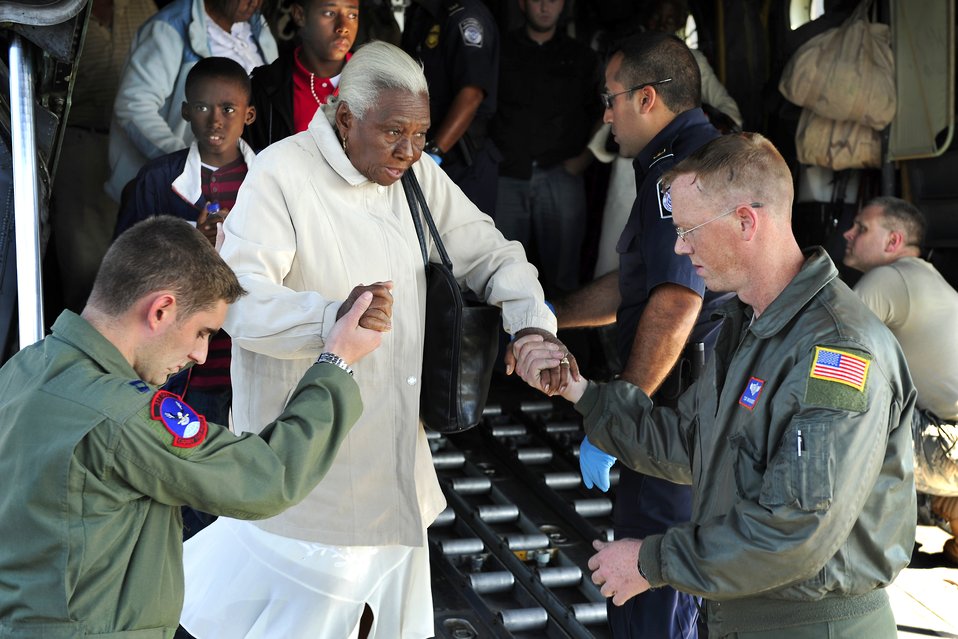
Southcom, Partners Prepare to Respond to Natural Disasters

Capt. Philip Noland, left, and Tech. Sgt. Brian Ghent help an elderly Haitian earthquake survivor down the ramp of a C-130 Hercules aircraft at Homestead Air Reserve Base, Fla., Jan. 20, 2010.